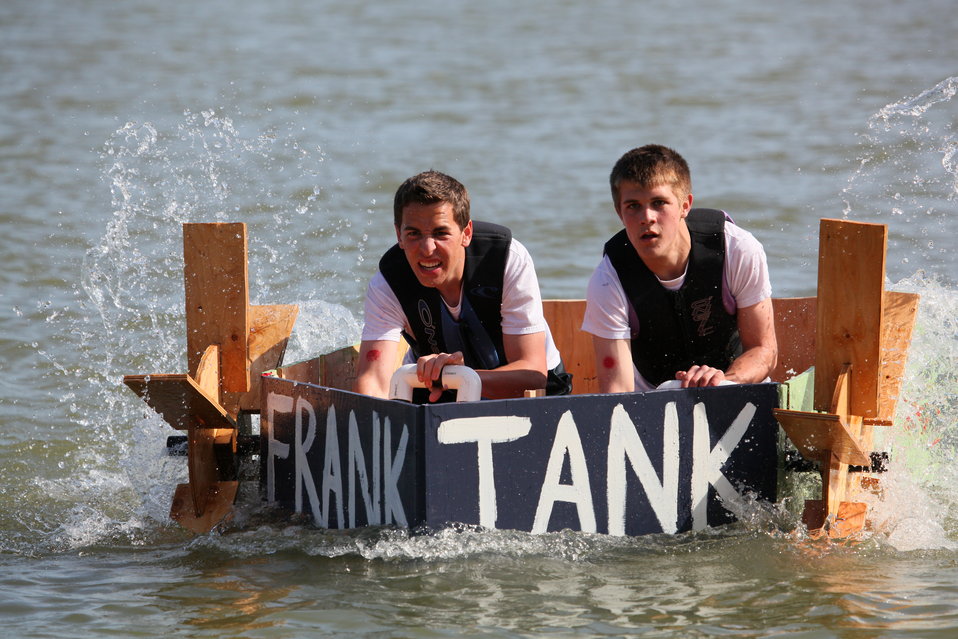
Boat regatta entrants test design and construction

Folsom High School students race back to shore during the 5th Annual Folsom High School Boat Regatta competition at Lake Natoma in Folsom, Calif., March 23, 2012. Arianna Raymundo, Zeffy Ruvalcaba and Fiorella Fuentes of the U.S. Army Corps of Engineers Sacramento District served as judges during the event, checking the design and construction of each student-built boat. Following the on-shore judging, the boats were put to the test on the cold waters of Lake Natoma, with students competing in drag and slalom races.